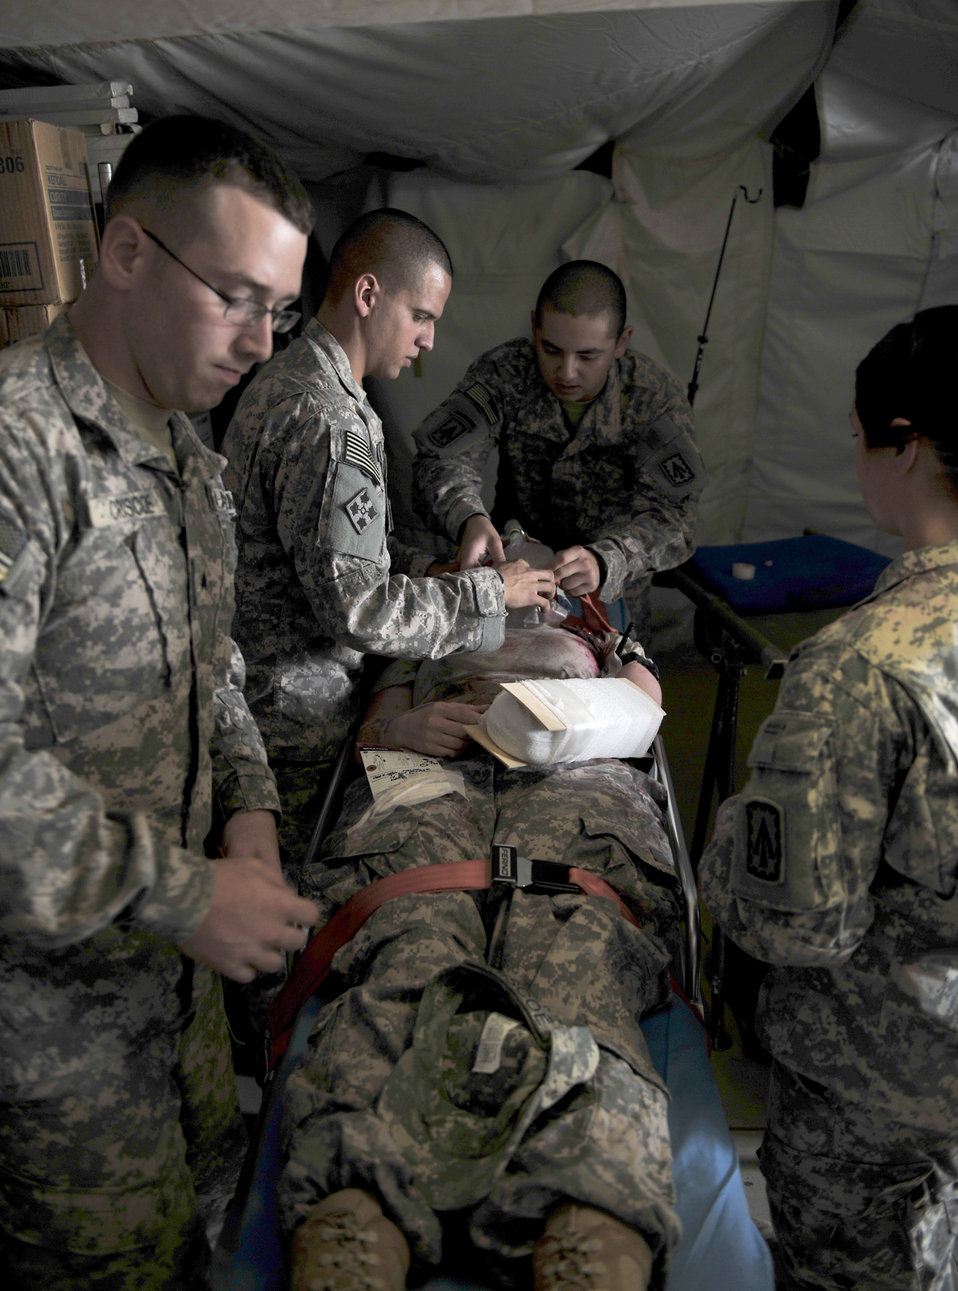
Training

Soldiers assigned to the 3rd Battalion, 4th Air Defense Artillery Regiment provide medical care to a solider that was injured by a UXO. A medic rushed out, provided immediate care and got the injured person to safety. Then medics administered realistic treatment including inserting an intravenous line, or IV, and a nasopharyngeal airway, a tube that secures an open airway. In a culmination of weeks of training, the Airmen and Soldiers conducted a joint emergency response exercise, June 23, to ensure the 380th AEW and mission partners are always ready.